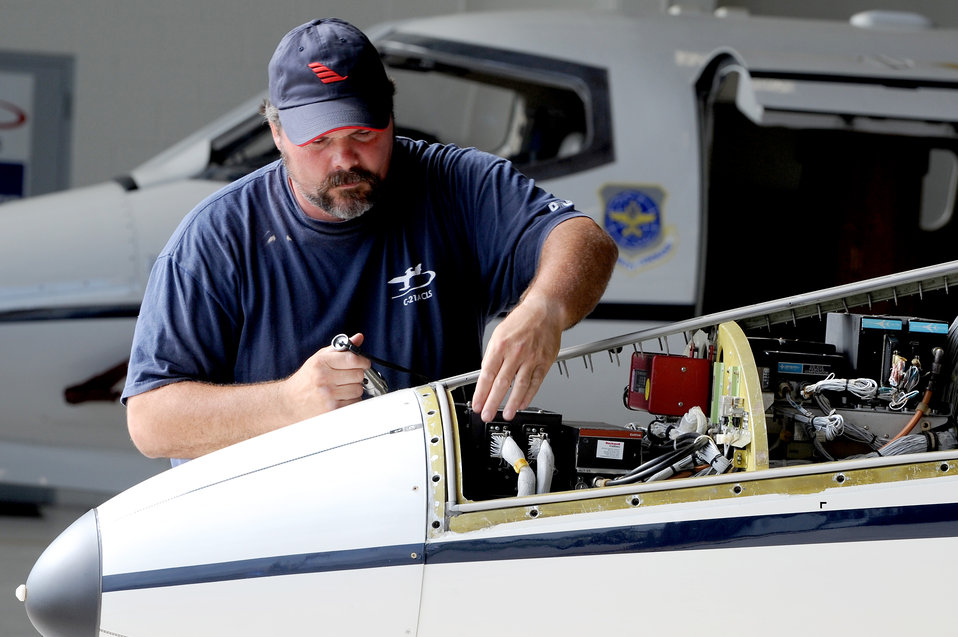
C-21 phase inspection

Joe Schein works on a C-21 during a phase inspection Sept. 16, 2010, at Scott Air Force Base, Ill. The phase inspections are done on aircraft after they reach flying milestones to ensure the aircraft remain in top condition. Mr. Schein is a contractor with DynCorp International.